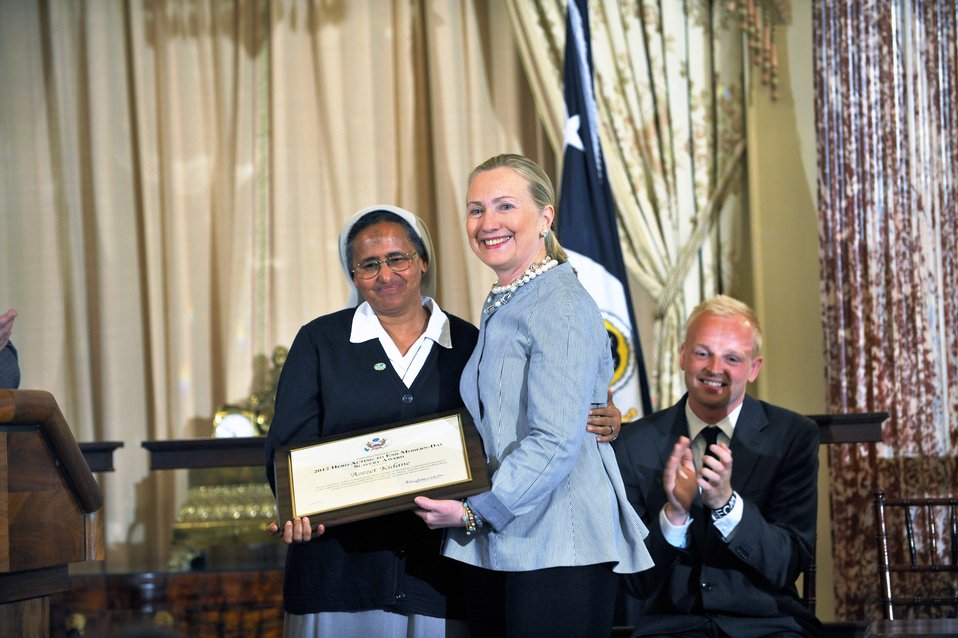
Secretary Clinton With TIP Hero Azezet Habtezghi Kidane

U.S. Secretary of State Hillary Rodham Clinton honors Azezet Habtezghi Kidane of Israel, a 2012 Trafficking in Persons (TIP) Report Hero, at the U.S. Department of State in Washington, D.C., on June 19, 2012.